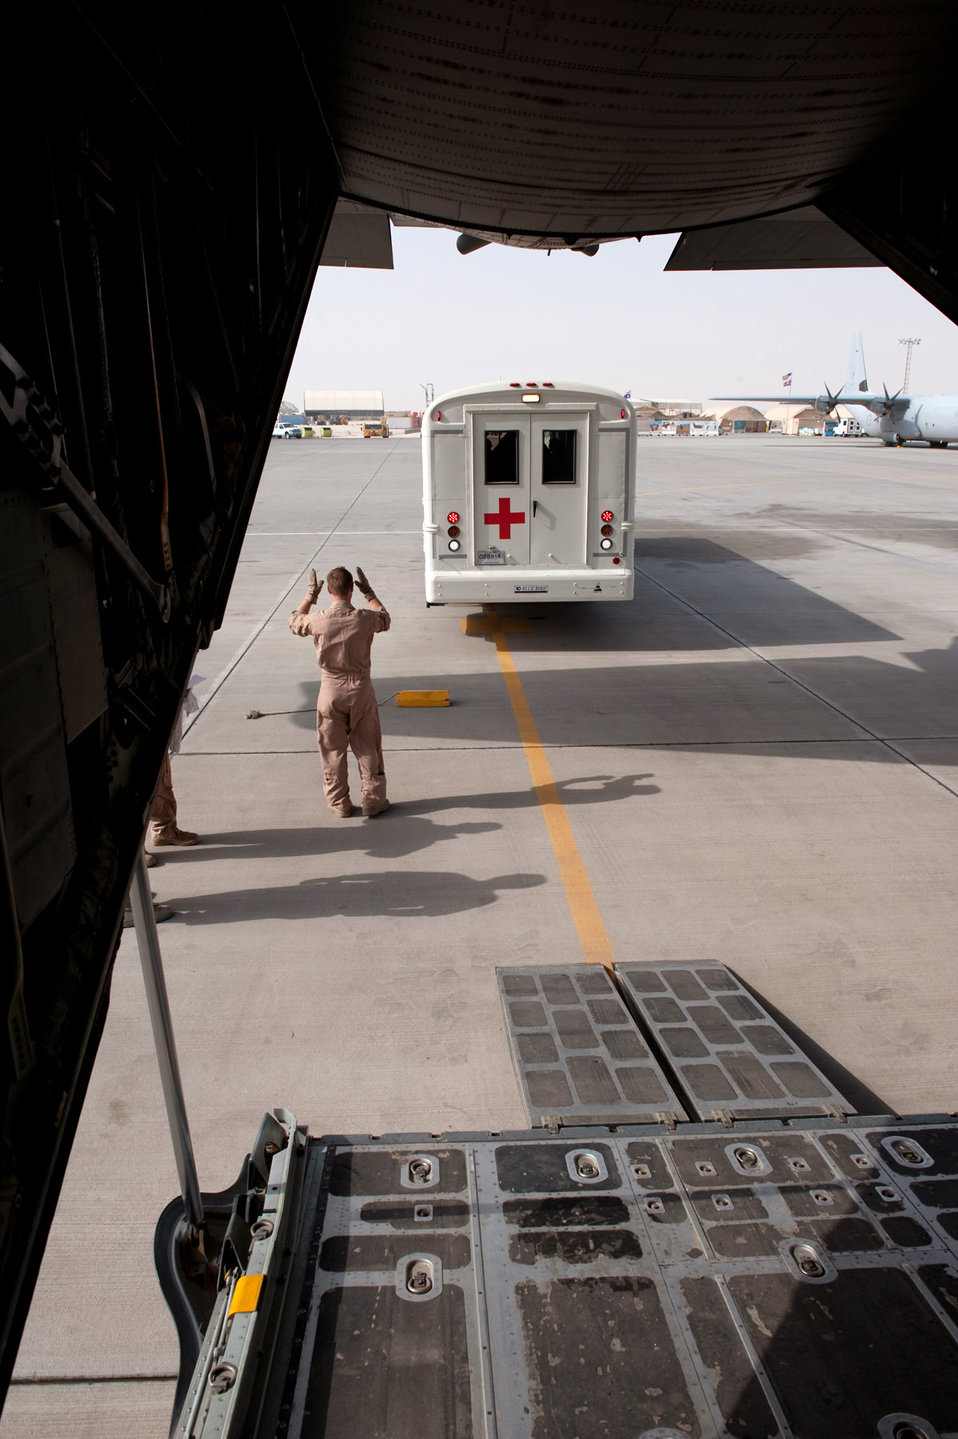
Airmen provide comfort, care with aeromedical evacuations

Tech. Sgt. Cory Preusse positions a medical transportation bus behind a C-130 Hercules Aug. 15, 2009, at an air base in Southwest Asia. Sergeant Preusse is a 746th Expeditionary Airlift Squadron loadmaster deployed from the Minnesota Air National Guard.